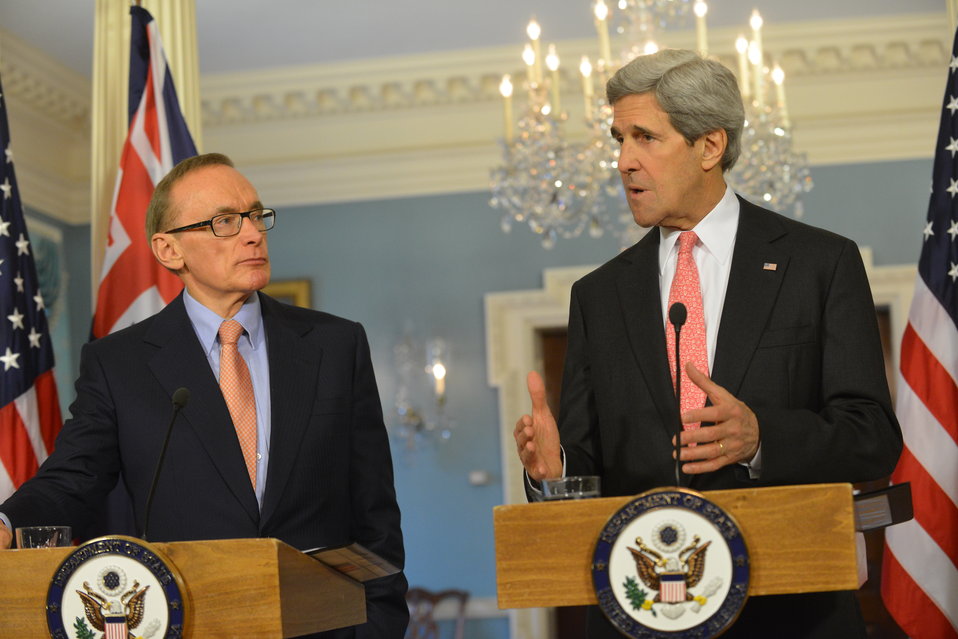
Secretary Kerry and Australian Foreign Minister Carr Address Reporters

U.S. Secretary of State John Kerry and Australian Foreign Minister Bob Carr address reporters after their bilateral meeting at the U.S. Department of State in Washington, D.C., on March 18, 2013.